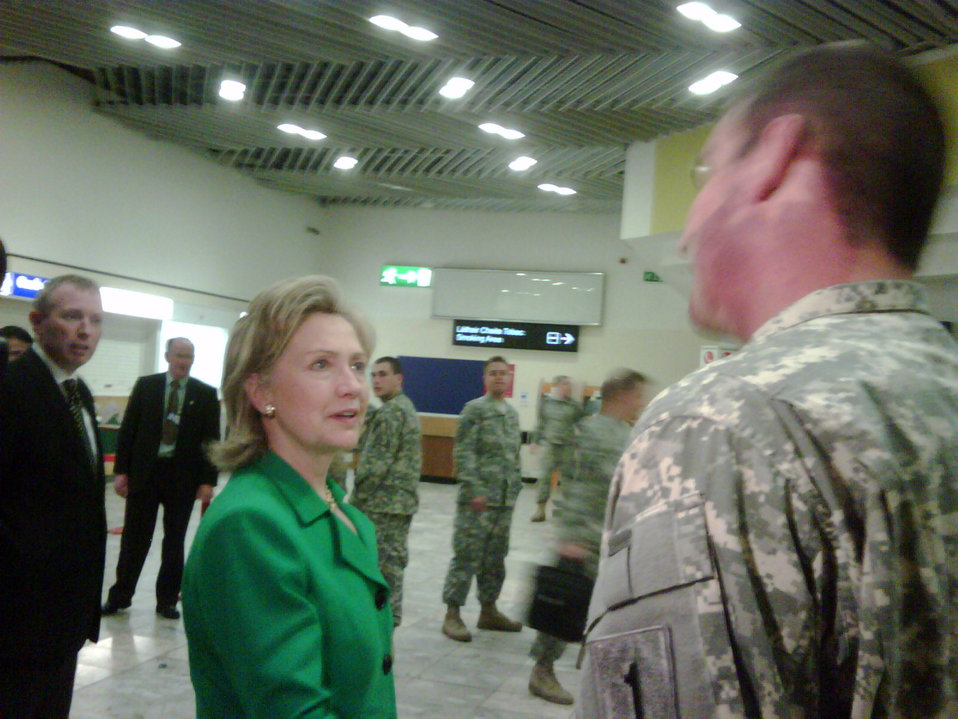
Secretary Clinton Wishes Troops Happy St. Patrick's Day

U.S. Secretary of State Hillary Rodham Clinton greets troops and wishes them a Happy St. Patricks Day in Ireland March 17, 2010.